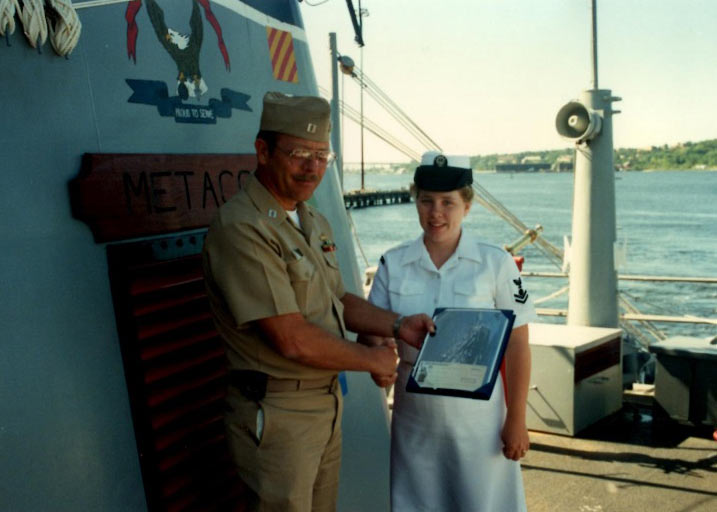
Lisa Coomes-Midwest Region

Lisa Coomes served in the U.S. Navy, 1985-1994, and is now an R3 Contract Specialist.